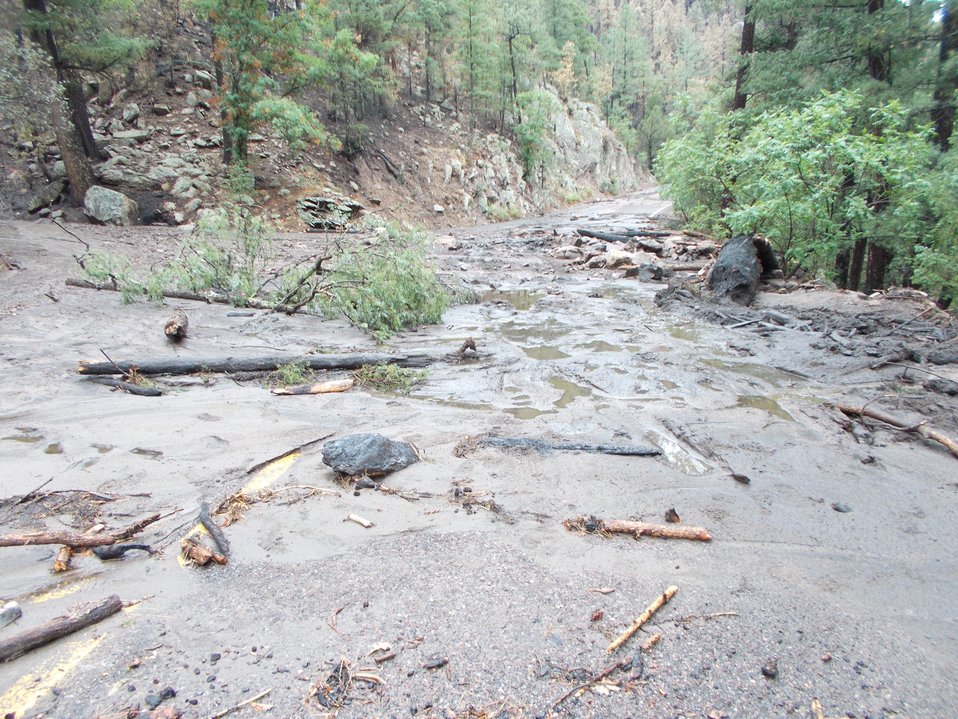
Debris is brought down to NM Hwy 152 after a thunderstorm due to the Silver Fire near Kingston, NM. The Silver Fire in Gila National Forest near Kingston, NM burned an estimated 138,705 acres.